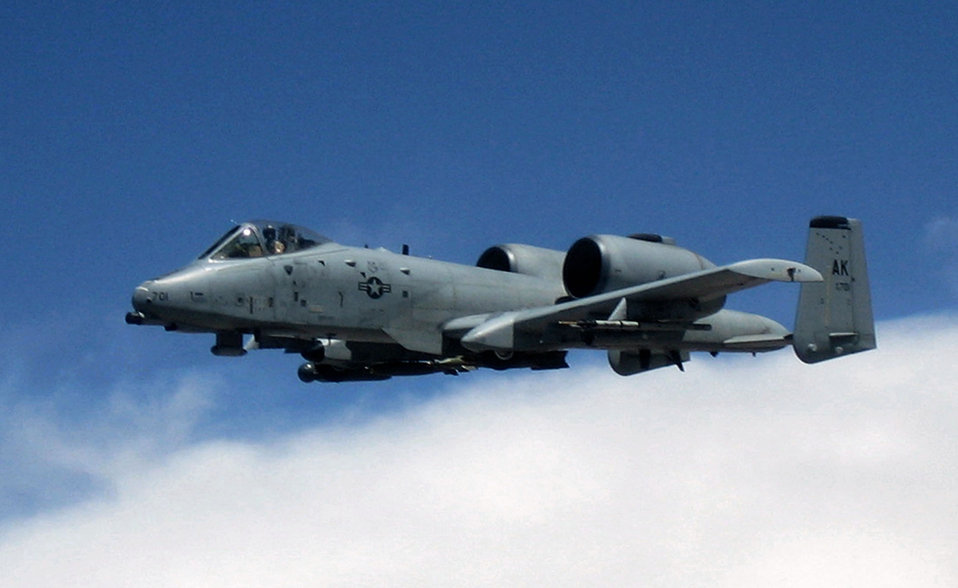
Sept. 11 airpower summary: A-10s keep vigilant watch

An A-10 Thunderbolt II flies a combat mission supporting Operation Enduring Freedom over Afghanistan. A-10s provide close-air support and employ a wide variety of conventional munitions, including general purpose bombs.